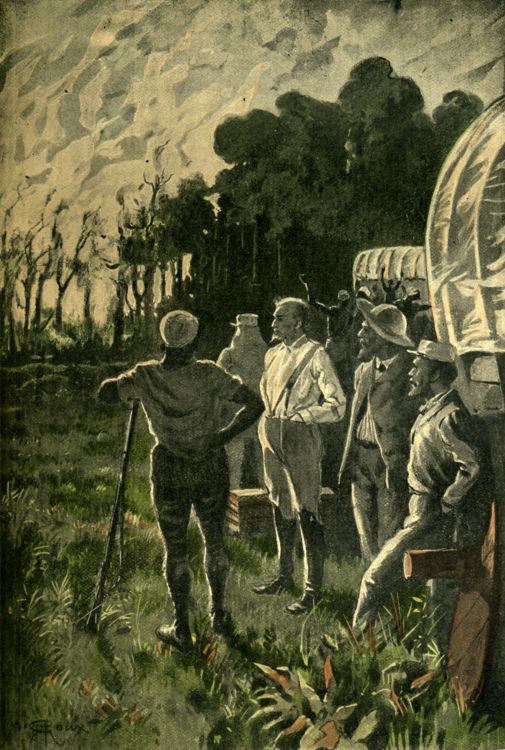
An illustration from Jules Verne's novel 'The Adventures of Three Englishmen and Three Russians in South Africa' (1870) drawn by Jules Férat. Polski: Ilustracja powieści Juliusza Verne'a 'Przygody trzech Rosjan i trzech Anglików w południowej Afryce' (1870) autorstwa Julesa Férata. Français : Jules Verne: 'Aventures de trois russes et de trois anglais dans l’Afrique australe' (1870), dessins par Jules Férat. Orginal description: Français : Sir John avait compris, le feu allait ouvrir un passage aux savants.